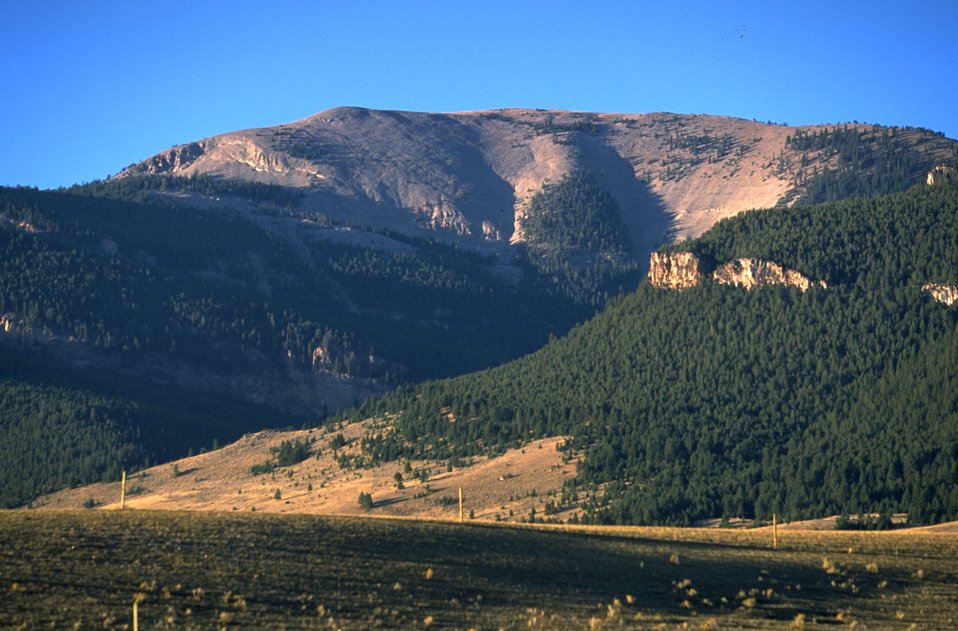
Scenic view of forest and mountain